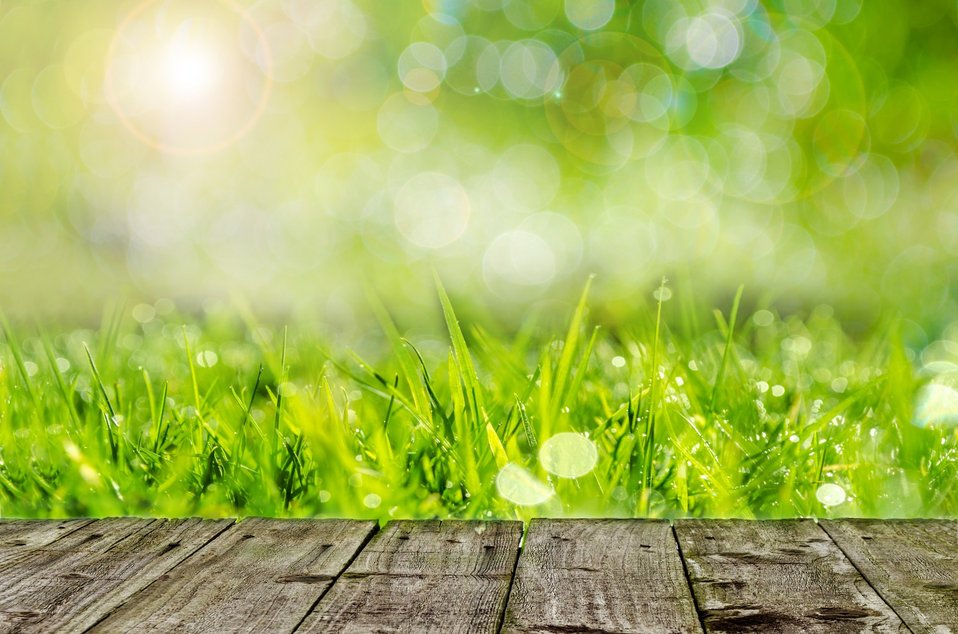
Wooden floor and green grass.